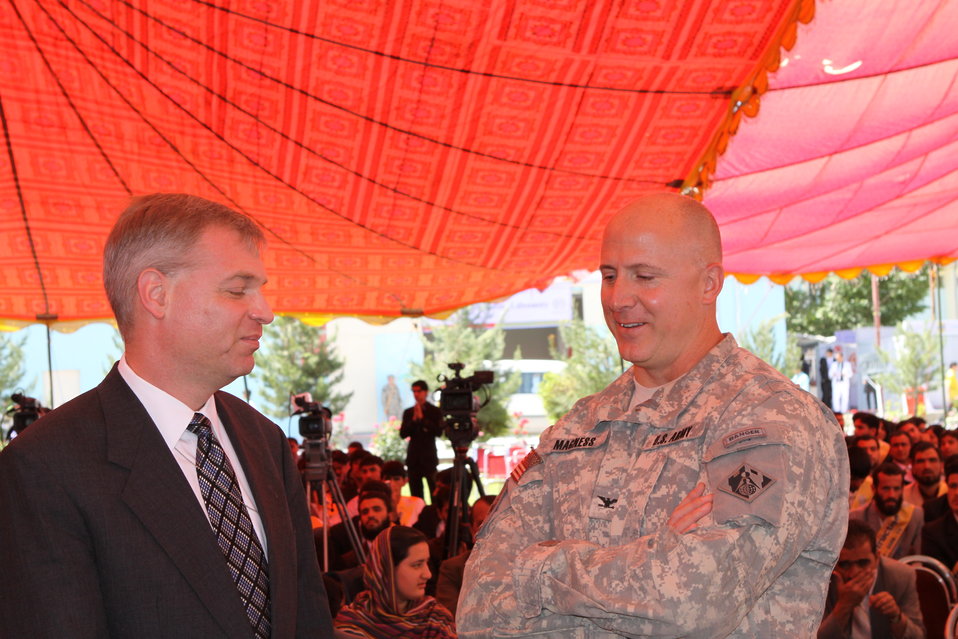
100522 ATVI Graduation 023